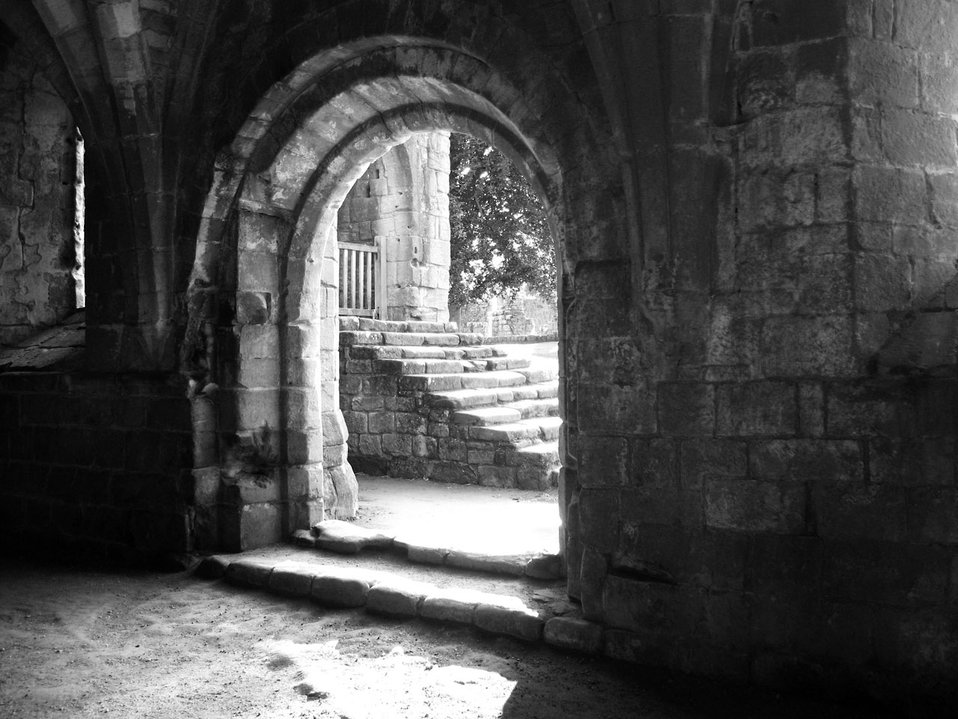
Stairs

Stone stairs in fountains abbey.